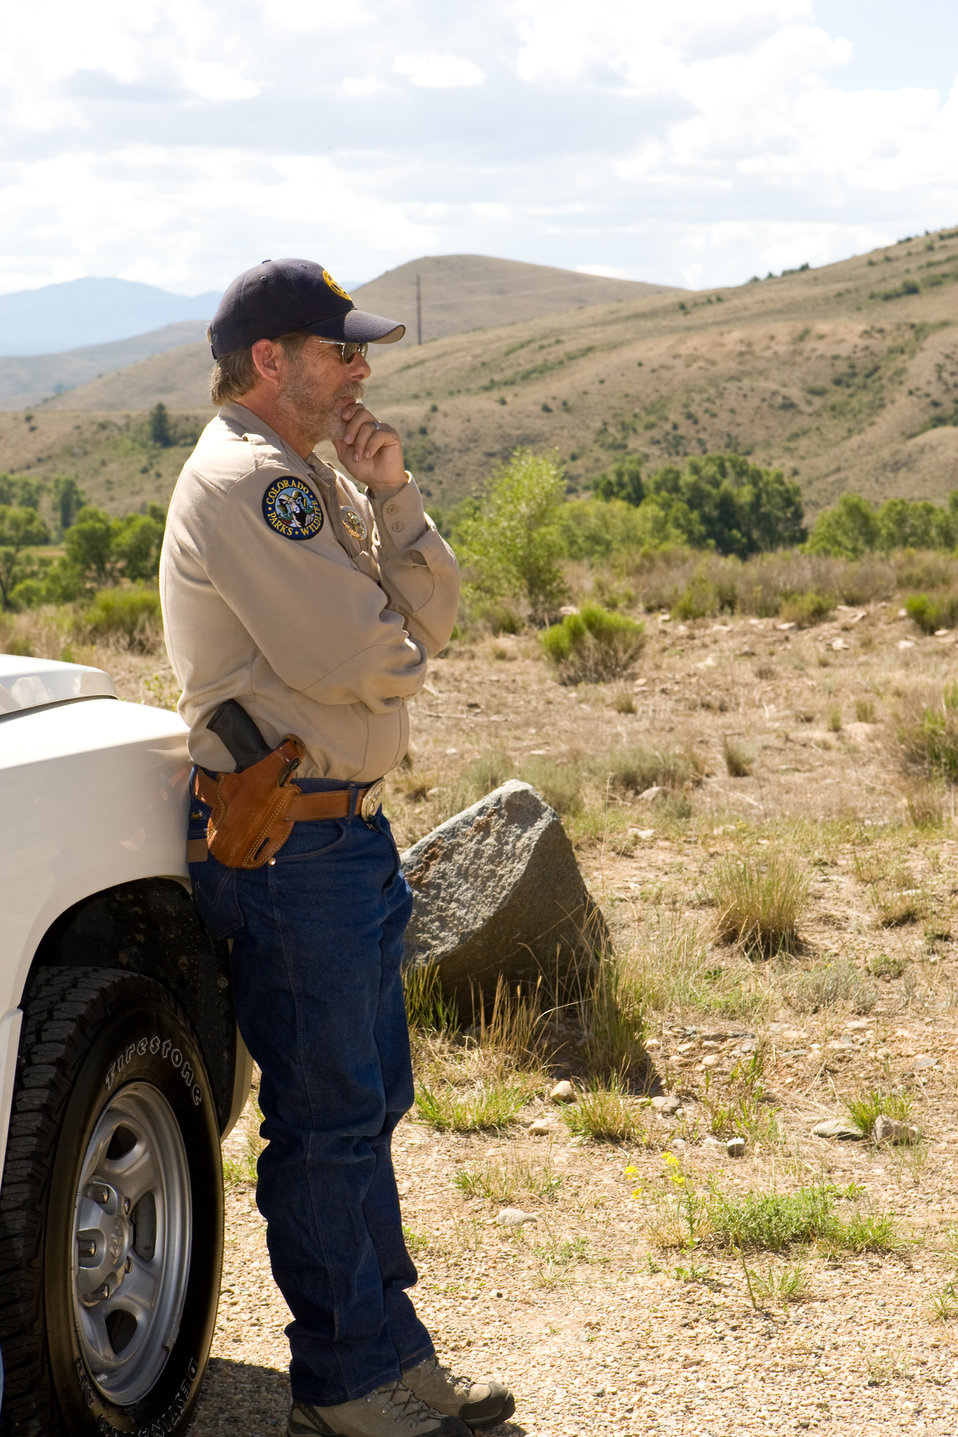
Colorado Rare Plant Conservation Initiative

The Colorado Rare Plant Conservation Initiative (RPCI) is a partnership of 23 statewide and regional agencies, private organizations, and academic institutions working to conserve 121 rare plants in Colorado. As part of these efforts the group developed the Colorado Rare Plant Conservation Strategy, developed Best Management Practices to reduce energy development impacts, addressed climate change, and developed focused strategies for the conservation of individual species at eight priority landscapes. The group has also worked to coordinate volunteer efforts for plant conservation across the state.